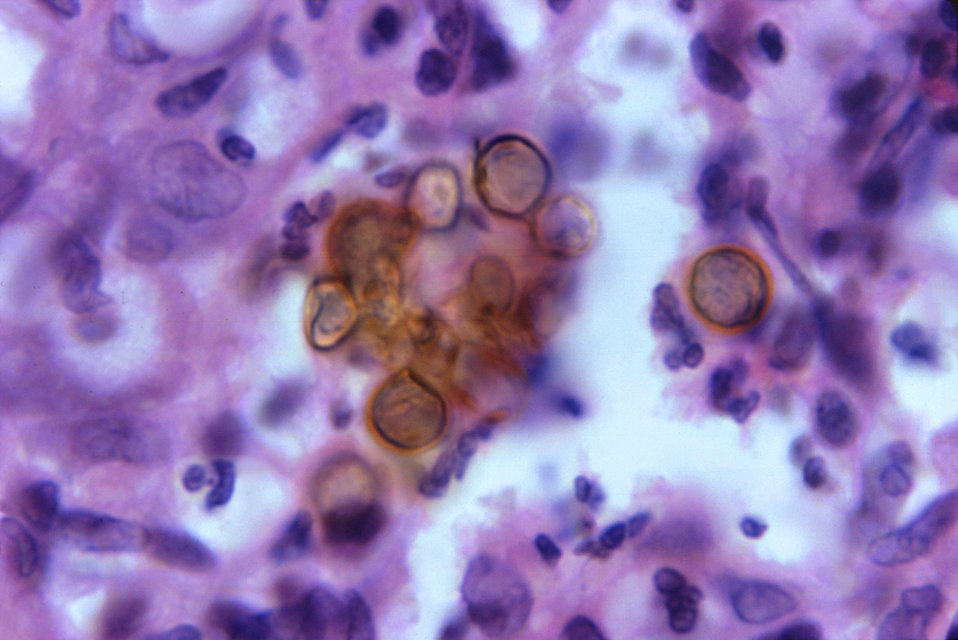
Magnified 1188X, this H&E-stained photomicrograph revealed histopathologic changes, which were indicative of the chronic fungal disease process known as chromoblastomycosis, or chromomycosis. The tissue sample was harvested from an Indian patient. Predominantly, this infection affects the skin, or cutaneous tissues, and usually begins at the site of a puncture wound, which introduces the pathologic fungal organism into the recipient's tissues.